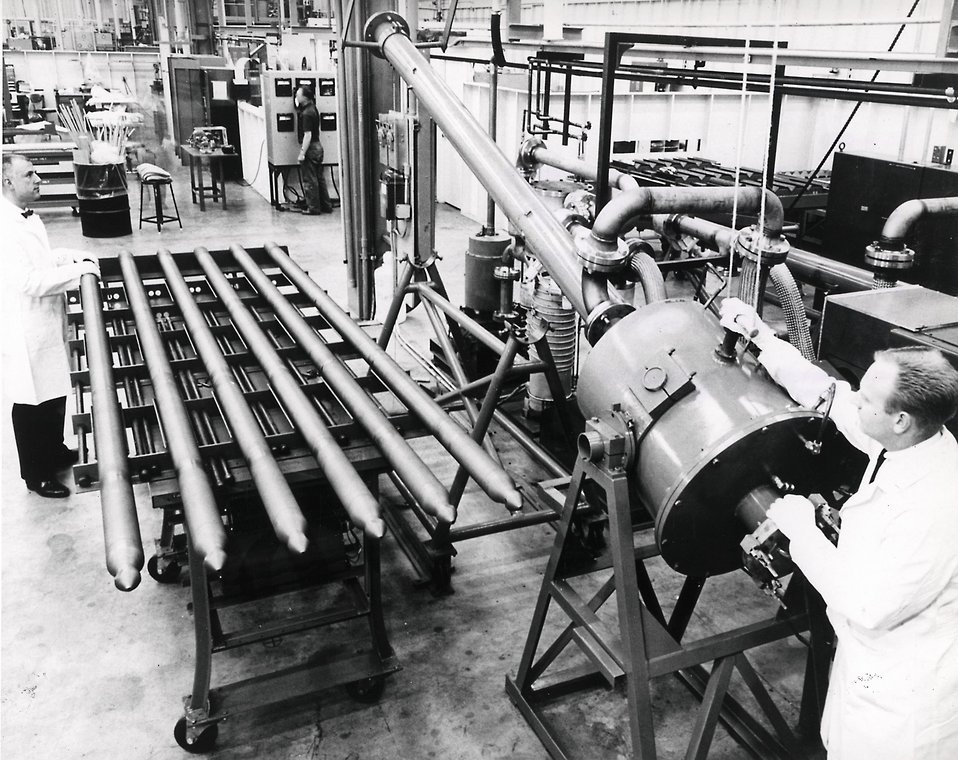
Fabrication of HTGR fuel elements: finished fuel elements for HTGR nuclear power station at Peach Bottom, Pennsylvania, are fully assembled on table at left, ready to be packaged for shipment. Circa 1964.